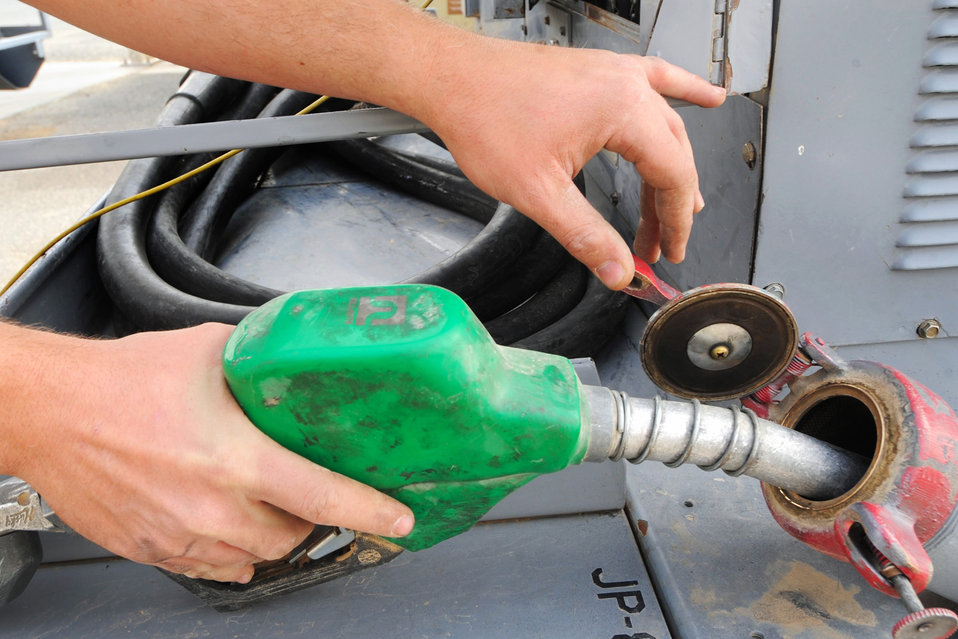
Airmen maintain the fight

Senior Airman Seth Winship refuels a generator on the flightline April 6, 2011, at an air base in Southwest Asia. Airman Winship is assigned to the 386th Expeditionary Maintenance Squadron.